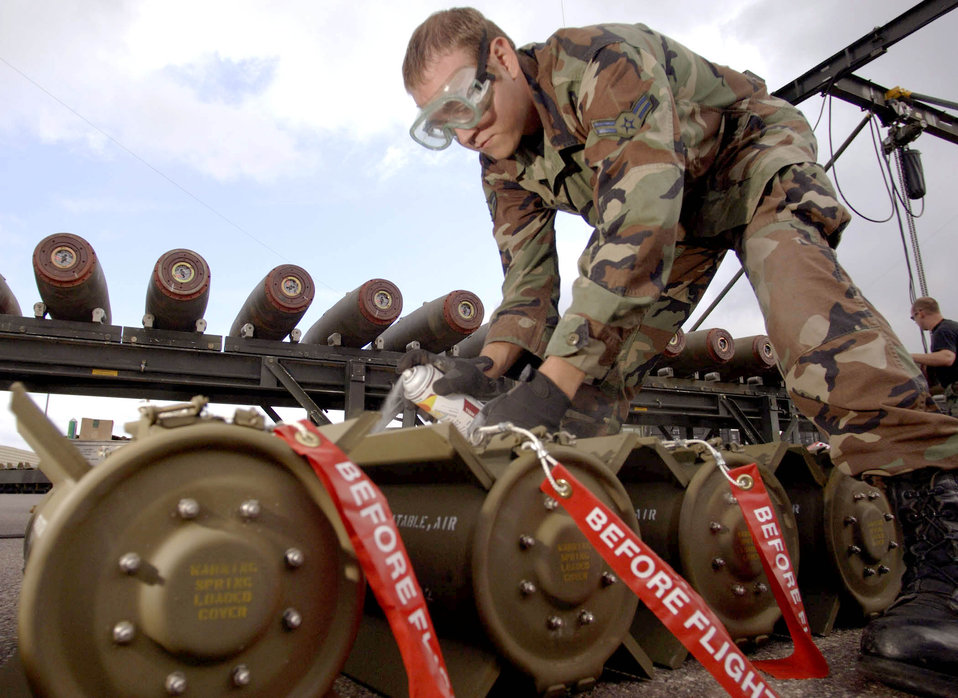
To build a better bomb

SPANGDAHLEM AIR BASE, Germany -- Airman 1st Class Jeremiah Phelps prepares the fins on a Mark-82 bomb here while preparing for a live fire exercise. He is a munitions crewmember with the 52nd Equipment Maintenance Squadron.